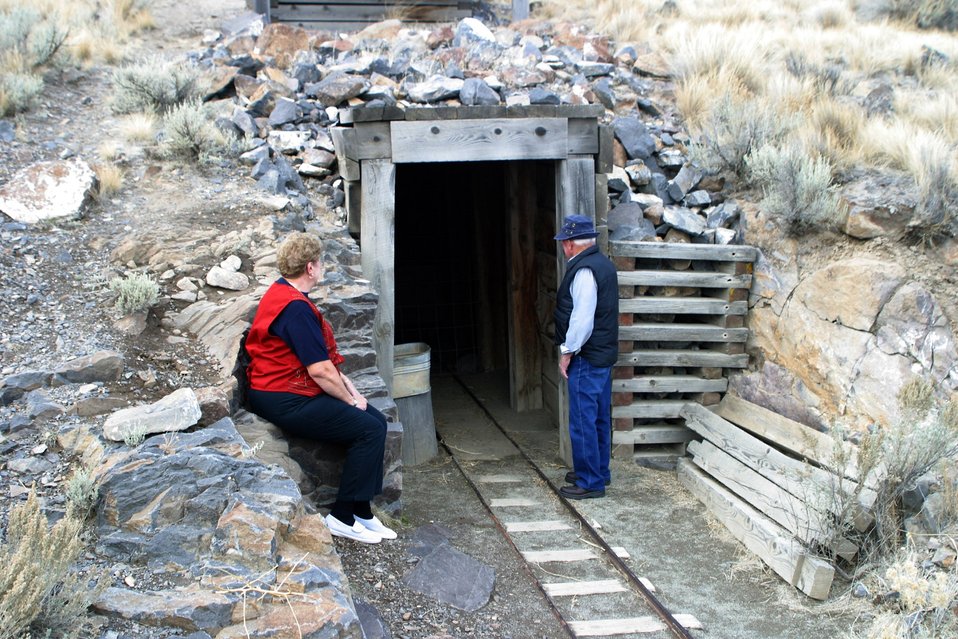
A replica of an old hard rock mine give visitors a sense of historic mining in eastern Oregon.